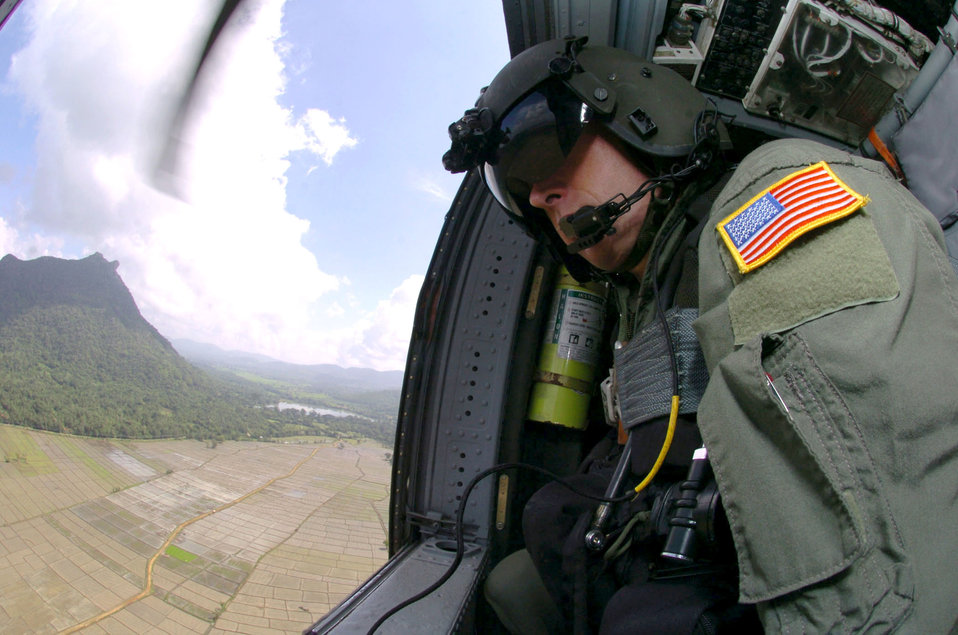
Relief effort making progress

OVER SRI LANKA -- Tech. Sgt. Keith Kolb scans the countryside below as he flies aboard an HH-60G Pave Hawk helicopter during an Operation Unified Assistance mission here. The Kadena Airmen are helping bring food, medicines and supplies to people affected by the Dec. 26 tsunamis. Sergeant Kolb is an aerial gunner from the 33rd Rescue Squadron at Kadena Air Base, Japan.